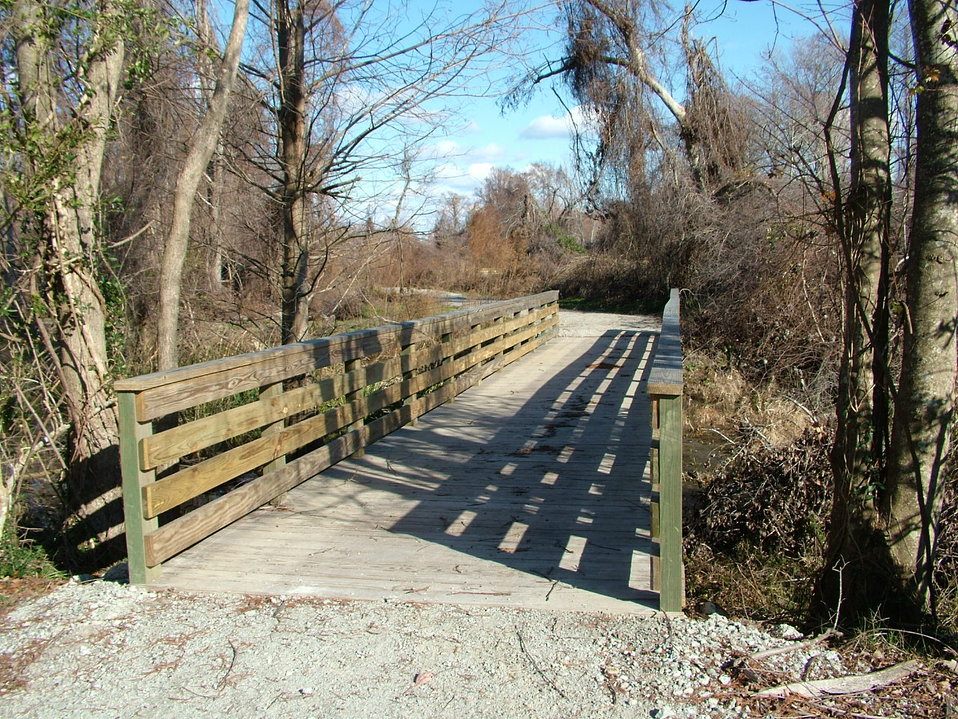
Fisher Slough Trail

The Fisher Slough Trail at Mattamuskeet National Wildlife Refuge.